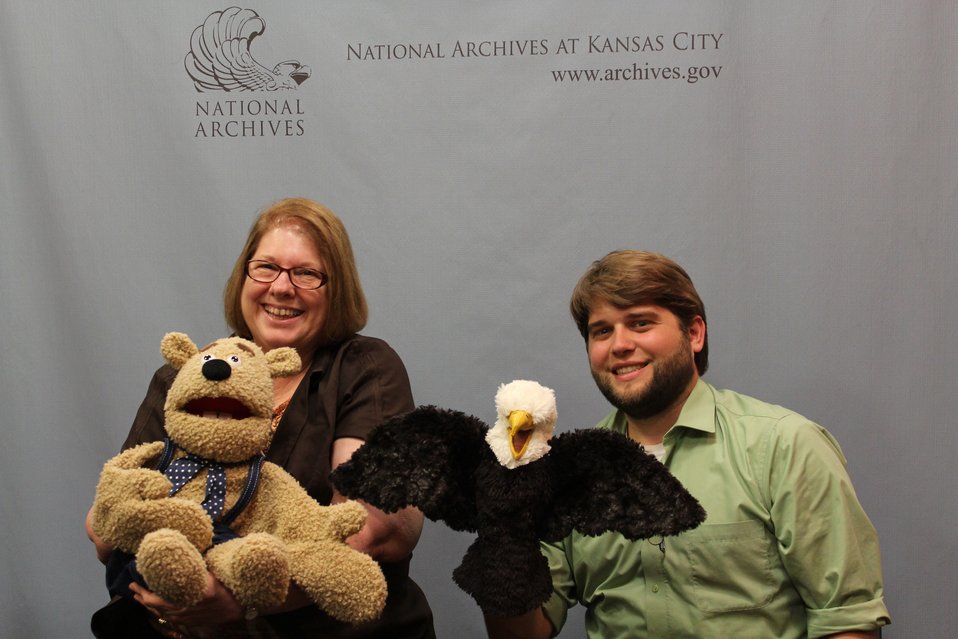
Mickey Ebert (LE) and Christopher Magee (RMKC) presenting a puppet show with Harry History and the Eagle for students via Interactive Distance Learning technology.; Location: National Archives at Kansas City - Interactive Distance Learning Lab, Kansas City, MO